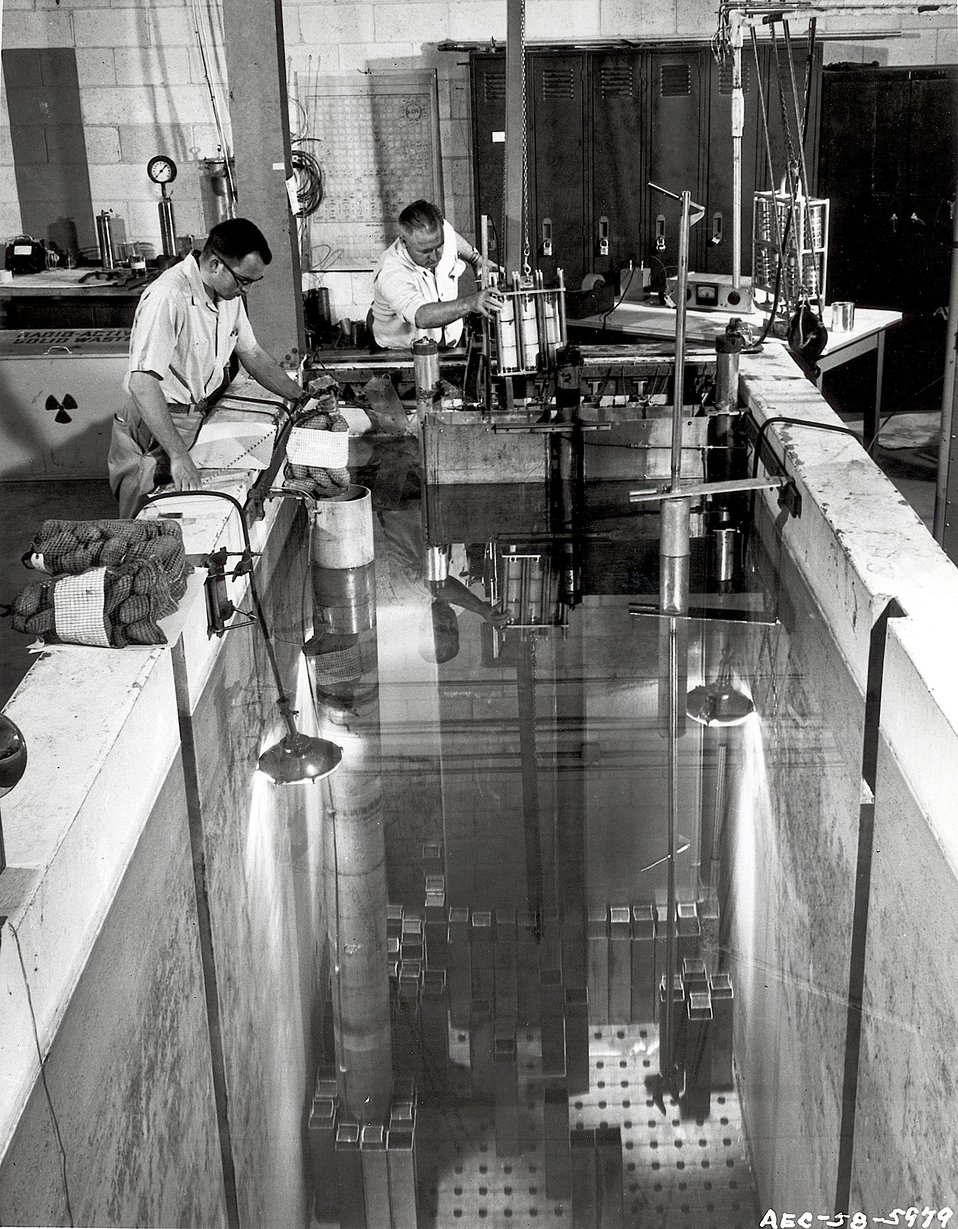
At far right, Tracy Reynolds, Phillips operator, is lowering cans of evaporated milk on rack into a water column for irradiation by spent fuel elements which can be seen on the canal floor 17 feet down.